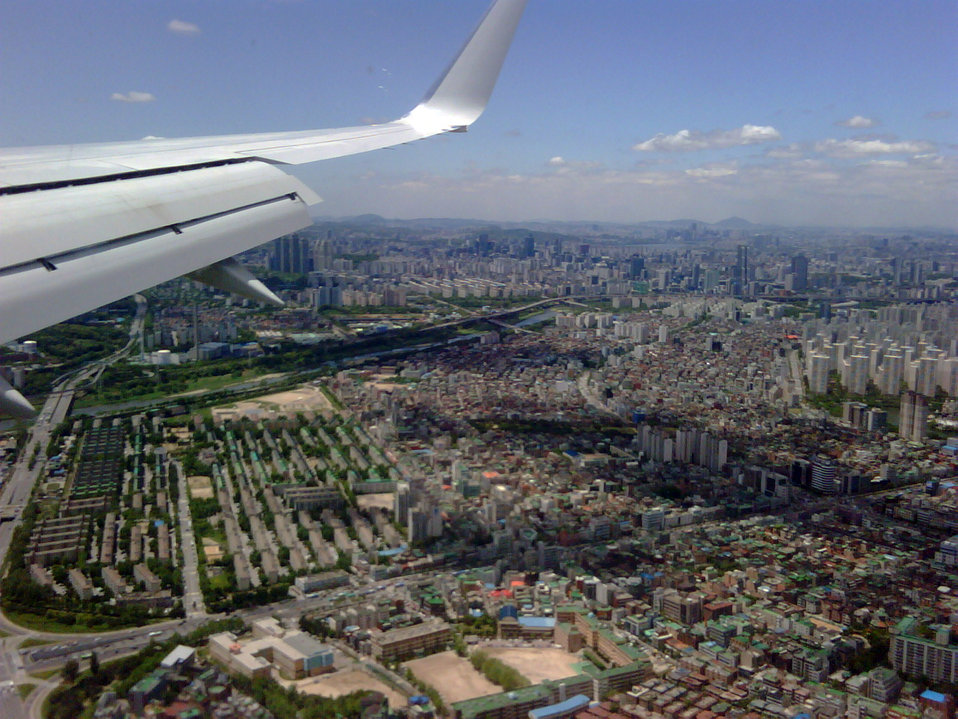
Behind the Scenes: View From Plane as Secretary Clinton Arrives in Seoul, South Korea

This is a view from the plane as U.S. Secretary of State Hillary Rodham Clinton arrives in Seoul, South Korea May 26, 2010.